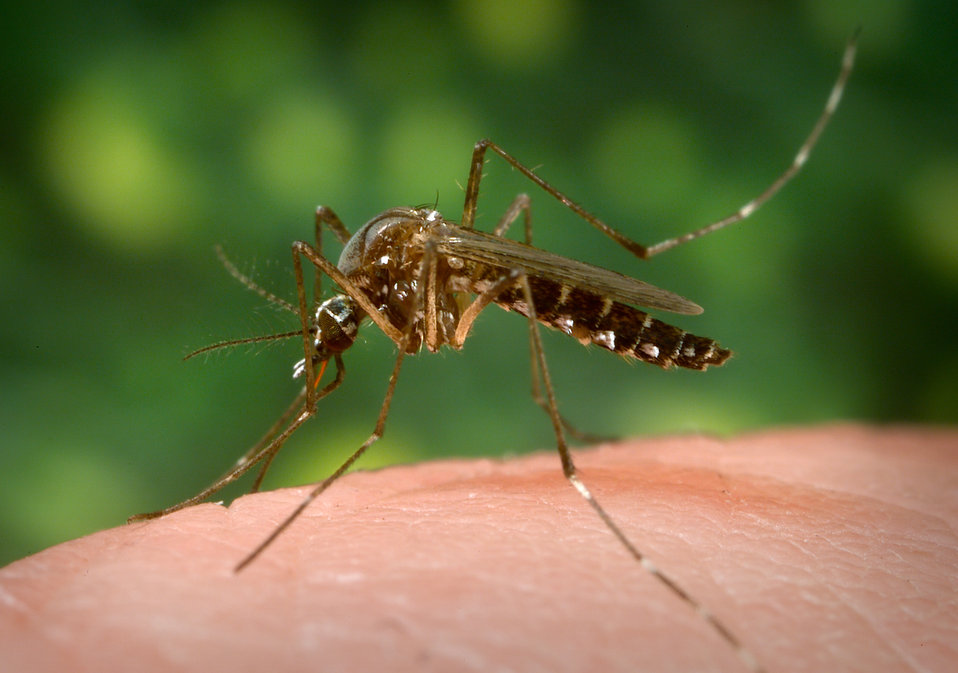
This 2006 photograph depicted a female Aedes aegypti mosquito as she was in the process of seeking out a penetrable site on the skin surface of its host. She'd then proceed to obtain a "blood meal", which normally would be from an unsuspecting host, but in this case, the CDC's biomedical photographer, James Gathany, had volunteered his own hand in order to entice the insect to alight, and feed. As it would fill with blood, the abdomen would become distended, thereby, stretching the exterior exoskeletal surface, causing it to become transparent, and allowing the collecting blood to become visible as an enlarging red mass. See PHIL # #8923, for this mosquito's appearance in its abdominally-distended state.